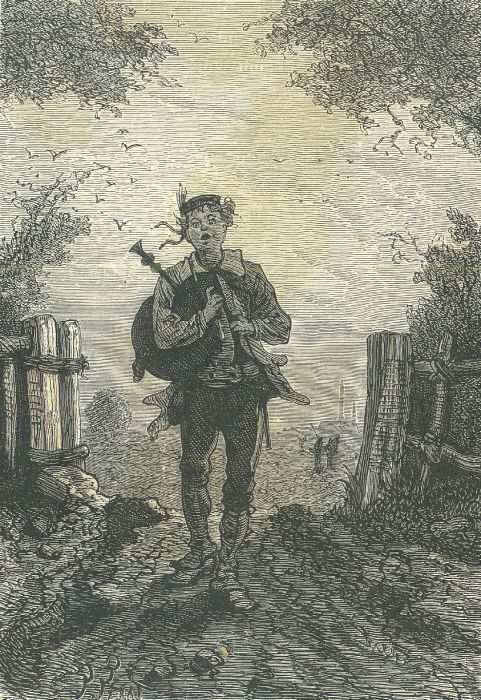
An illustration from the novel 'The Child of the Cavern' (alternative English titles for this novel include: Black Diamonds, Black Indies, Child of the Cavern, or Strange Doings Underground and The Underground City) by Jules Verne drawn by Jules Férat. Polski: Ilustracja powieści Juliusza Verne'a 'Czarne Indie' autorstwa Julesa Férata. Français : 'Les Indes noires', Jules Férat. Orginal description from the book: Français : Jack Ryan.